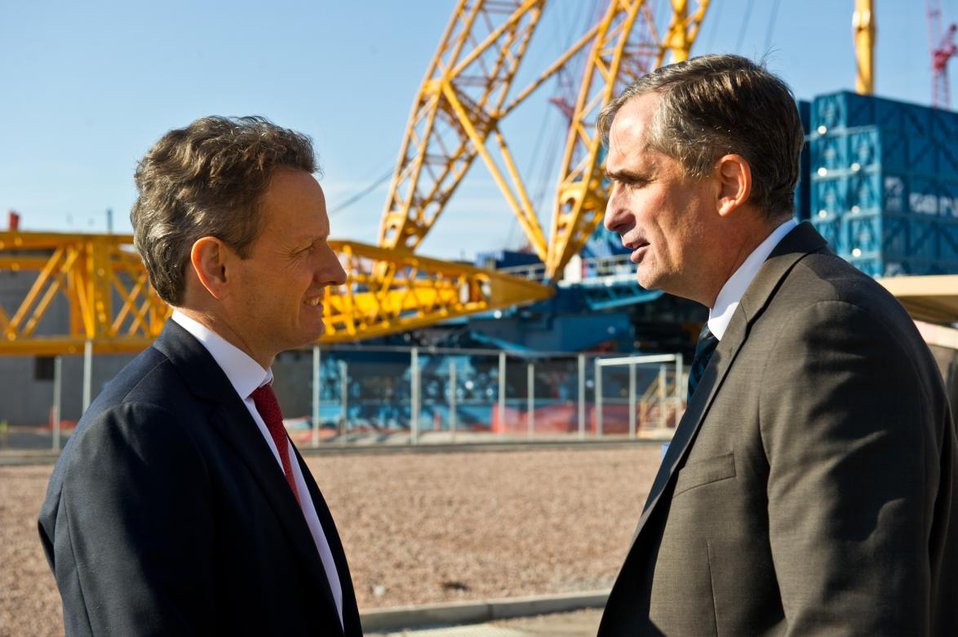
Treasury Secretary Geithner Tours Intel Facilities in Arizona

Treasury Secretary Tim Geithner and Senior Vice President Brian Krzanich toured construction of a new facility at Intel Arizona that is the company’s second largest site in the United States and is the largest employer in Chandler, with more than 10,000 employees.